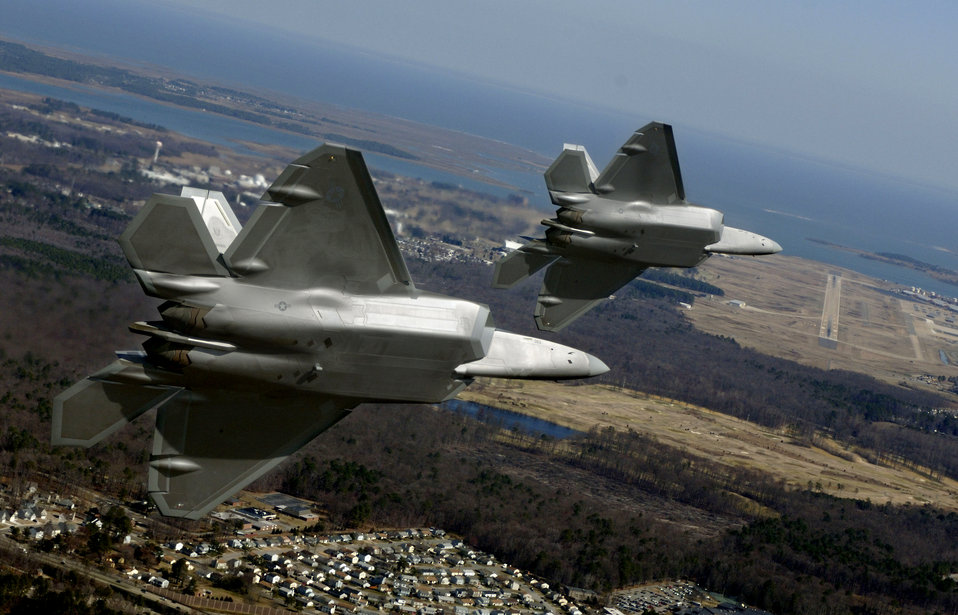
Final approach

Lt. Col. Dirk Smith, 94th Fighter Squadron commander, and Maj. Kevin Dolata, 94th FS assistant director of operations, turn in on final approach to Langley Air Force Base, Va., Friday, March 3, 2006, to deliver the first F-22A Raptors assigned to the 94th Fighter Squadron.